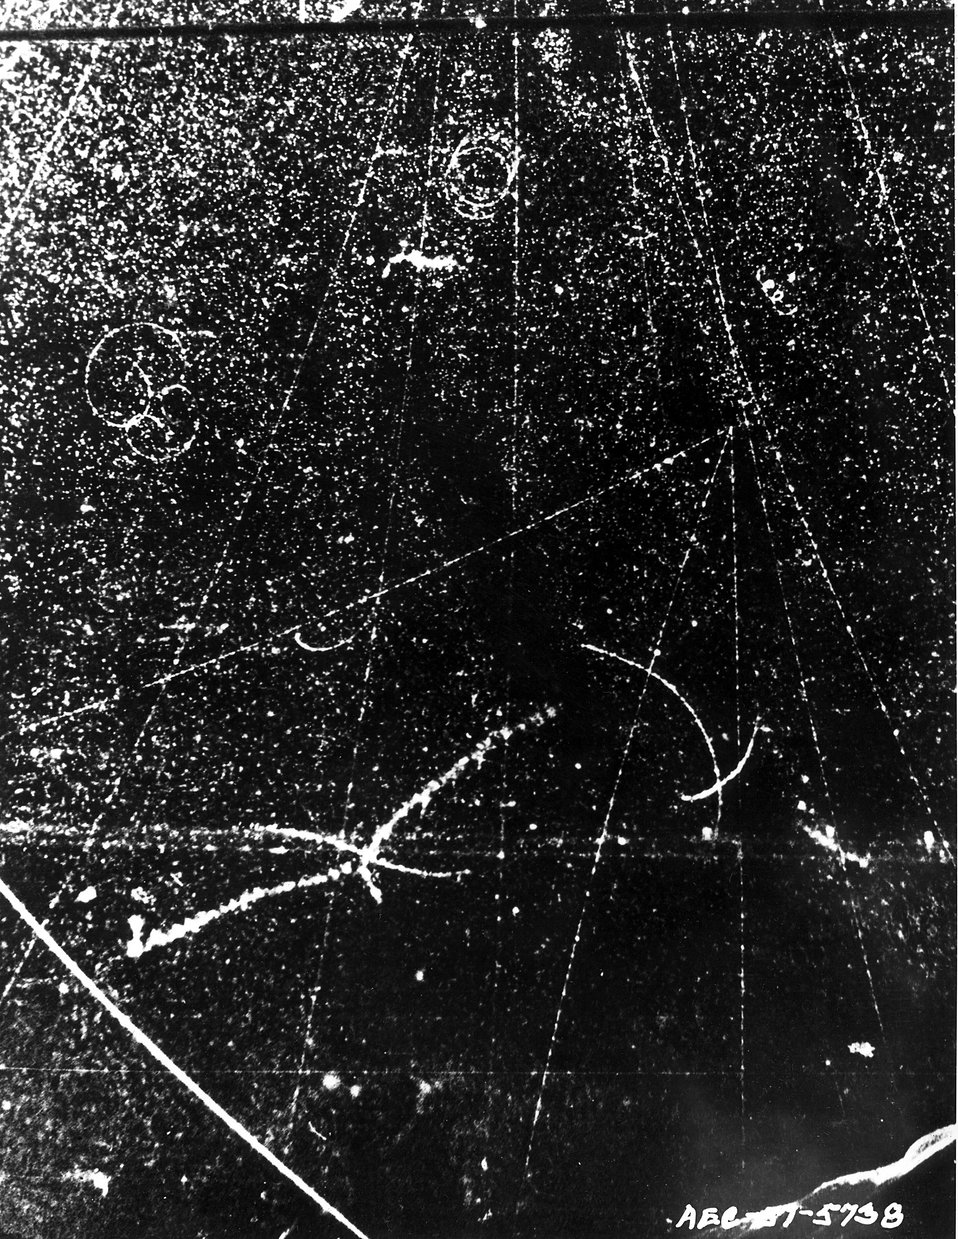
Neutron-proton collision produced by Brookhaven Cosmotron. c. 1957